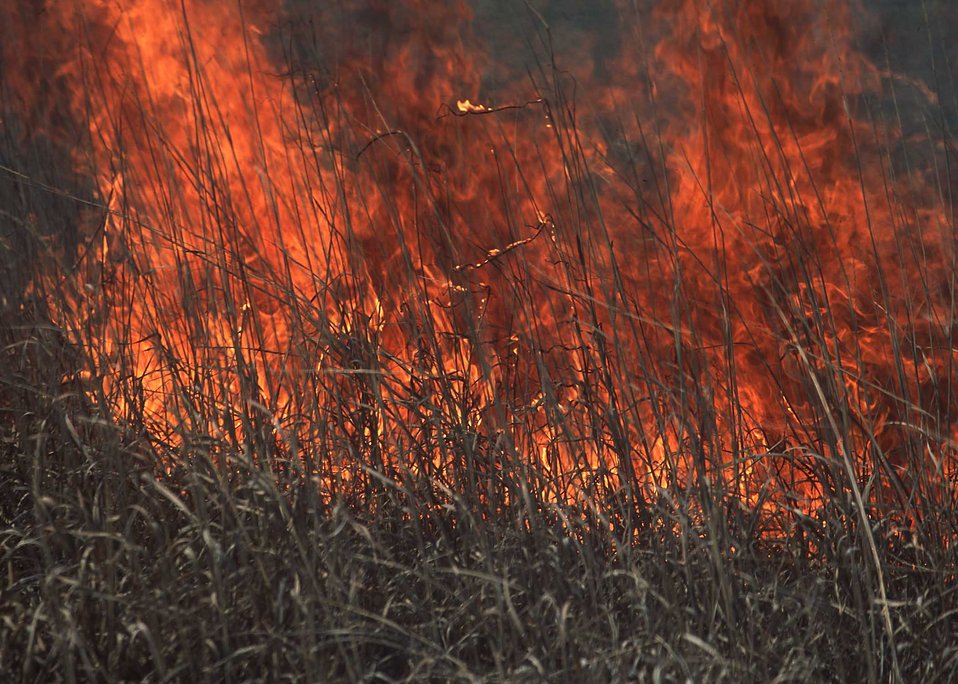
Prairie burn to stimulate new growth and recycle nutrients. Konza Biological Research Station, Manhattan, KS.